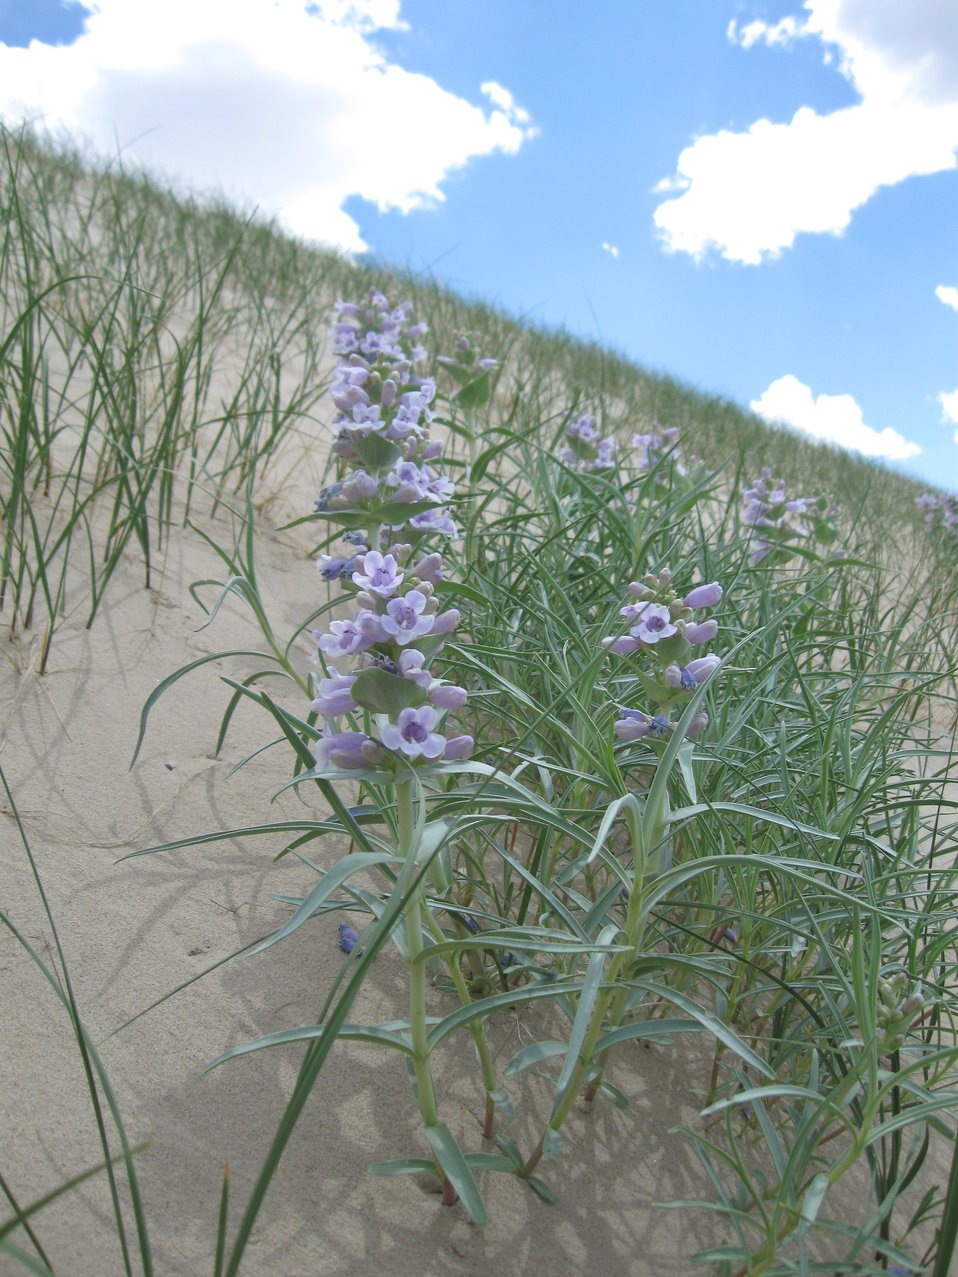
Blowout Penstemon in Wyoming

The blowout penstemon (penstemon haydenii) is
a threatened species under the Endangered Species Act. This blooming specimen is seen here on the shifting dunes of western Wyoming in June of 2009.

Credit: Patricia Sweanor / USFWS

Photo Contest Entry #126